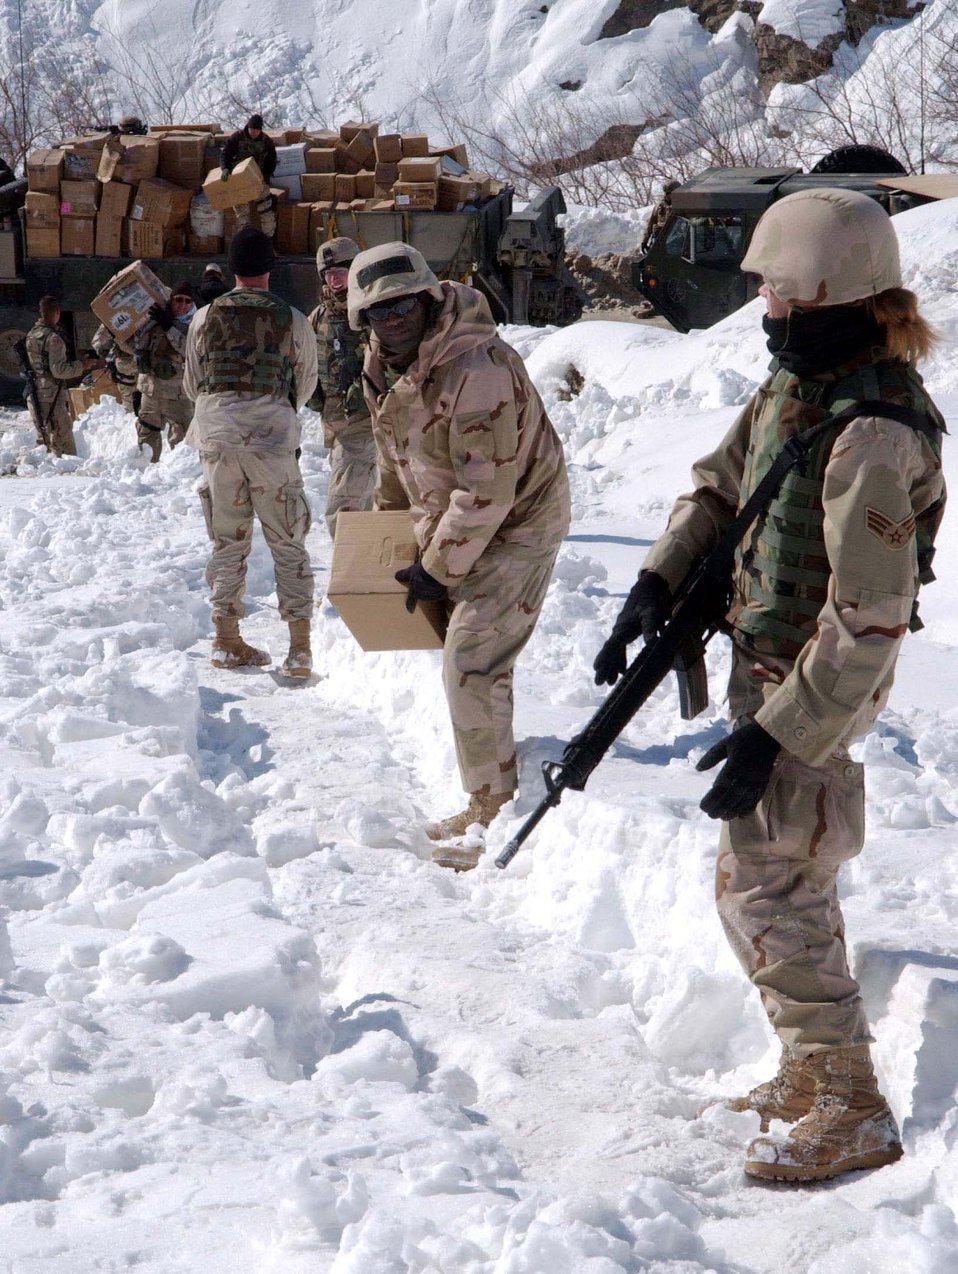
Parwan villages receive emergency relief from Bagram Soldiers, Airmen

PARWAN DISTRICT, Afghanistan -- Airmen and Soldiers form a human chain to move boxes of supplies from a relief truck here. The servicemembers are part of a team delivering humanitarian aid to snow-bound villages.